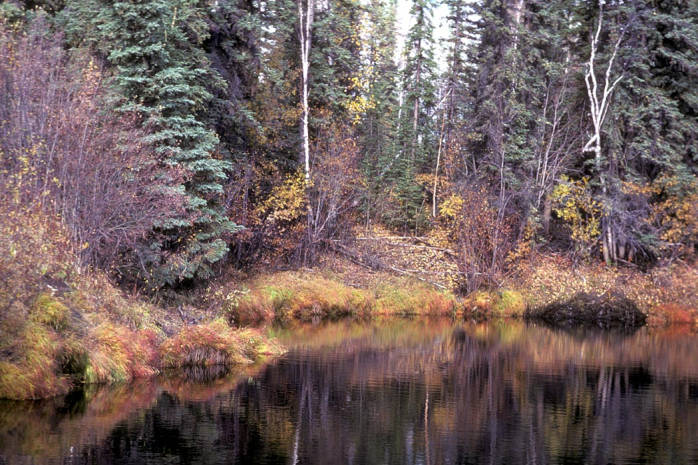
Scenic View of Tetlin National Wildlife Refuge